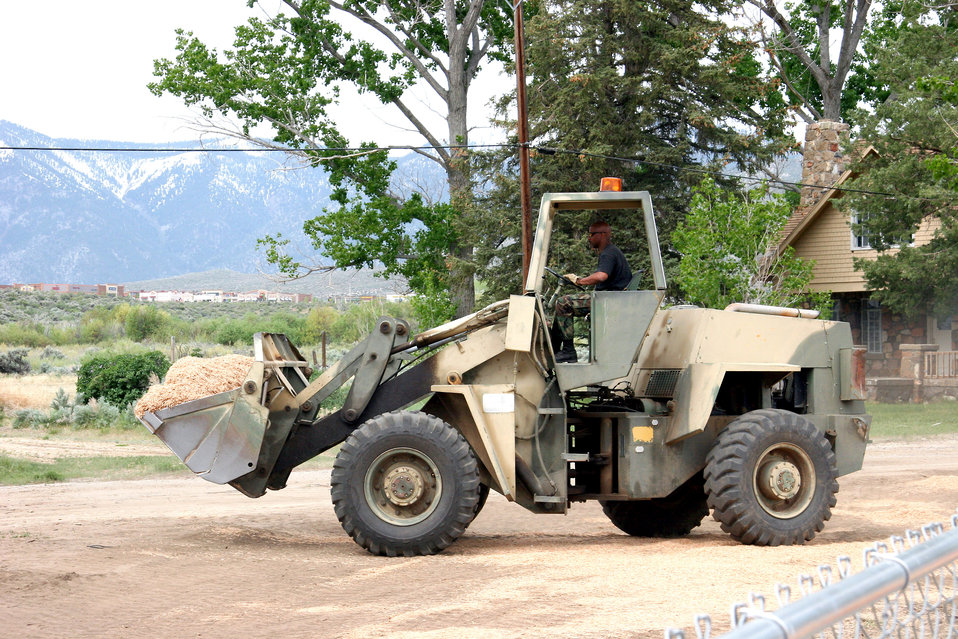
939th CES Washoe, Nev. IRT

Master Sgt. Jon Conway moves bark chips into the playground at the tribal head start building on the Washoe Indian Reservation near Carson City, Nev. May 15, 2006. He is the first sergeant and utilities craftsman with the 939th Civil Engineering Squadron and one of 14 reservists deployed as part of an Air Force Reserve Command innovative readiness training program.